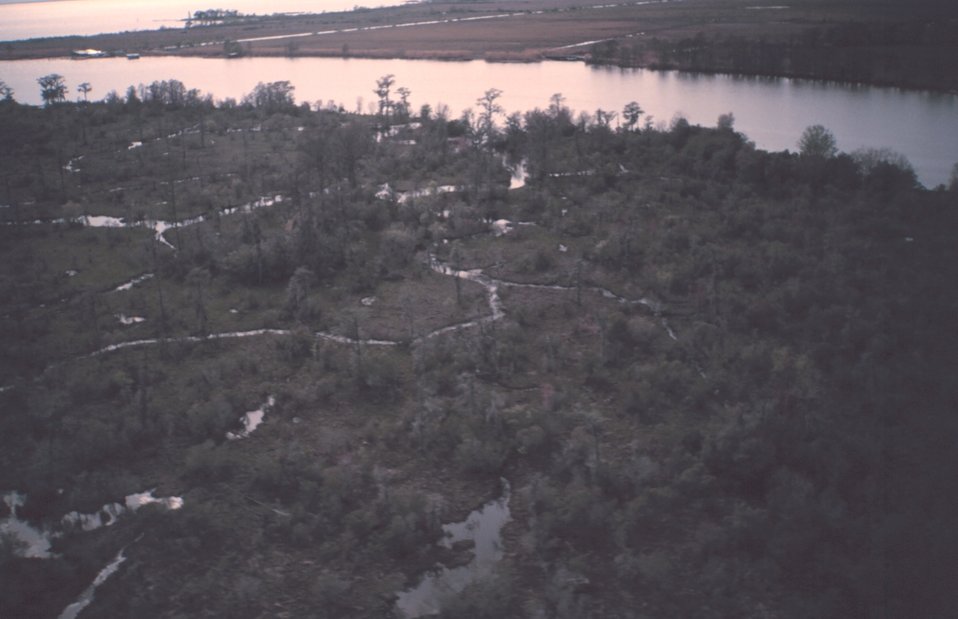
Cypress marsh at the edge of Lake Ponchartrain as seen from the air.